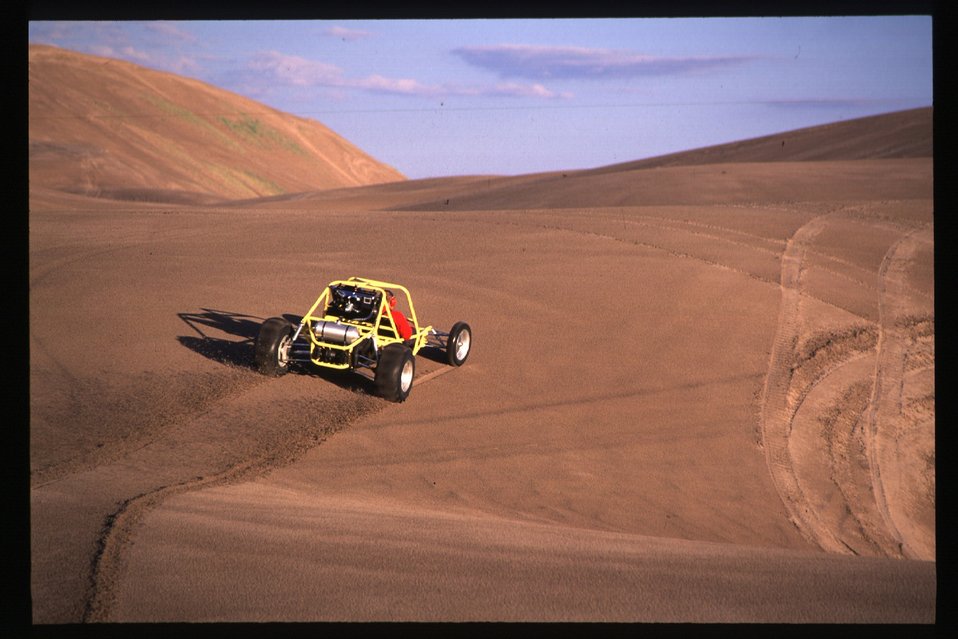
Recreation St Anthony Sand Dunes Off Highway Vehicles Idaho Falls Field Office USRD Upper Snake River District